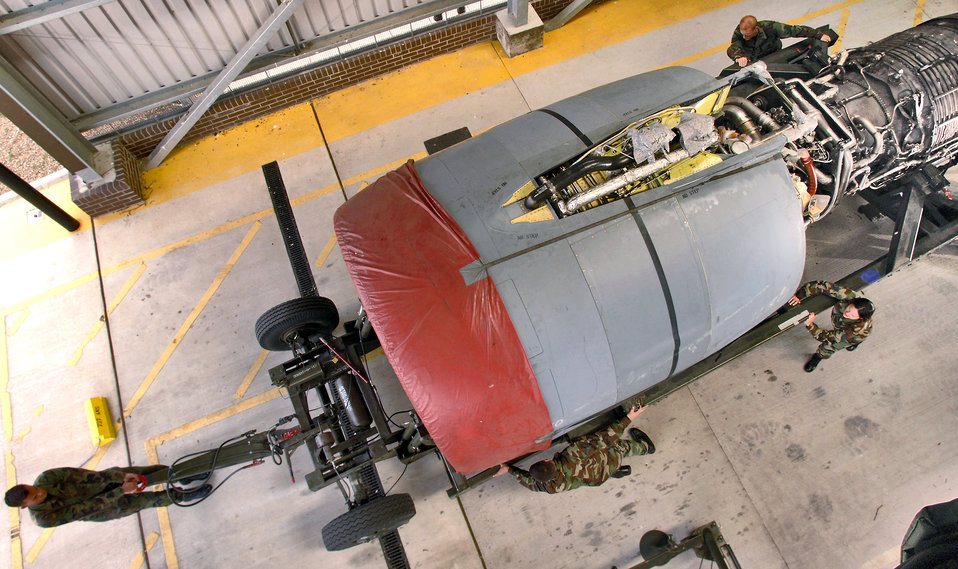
Aerial port Airmen make own training opportunities

Staff Sgt. Erik Lucas and (left to clockwise) Tech. Sgt. Douglas Younts, Staff Sgt. Abbi Cabeen and others position a turbofan engine into a storage facility at Royal Air Force Mildenhall, England, on July 31. The 727th Air Mobility Squadron keeps and maintains spare C-5 Galaxy engines in case a visiting transport needs an engine swap. Each engine produces 43,000 pounds thrust, weighs 7,900 pounds and is nearly 27 feet long.